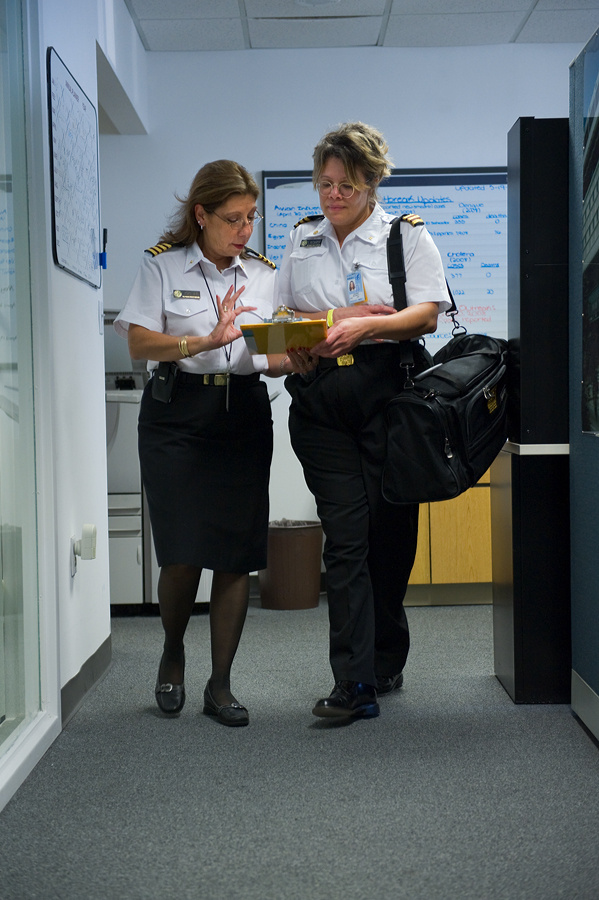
This image was captured during an October 2008 Preparedness Exercise involving a number of Federal and local agencies, including the Centers for Disease Control and Prevention (CDC).